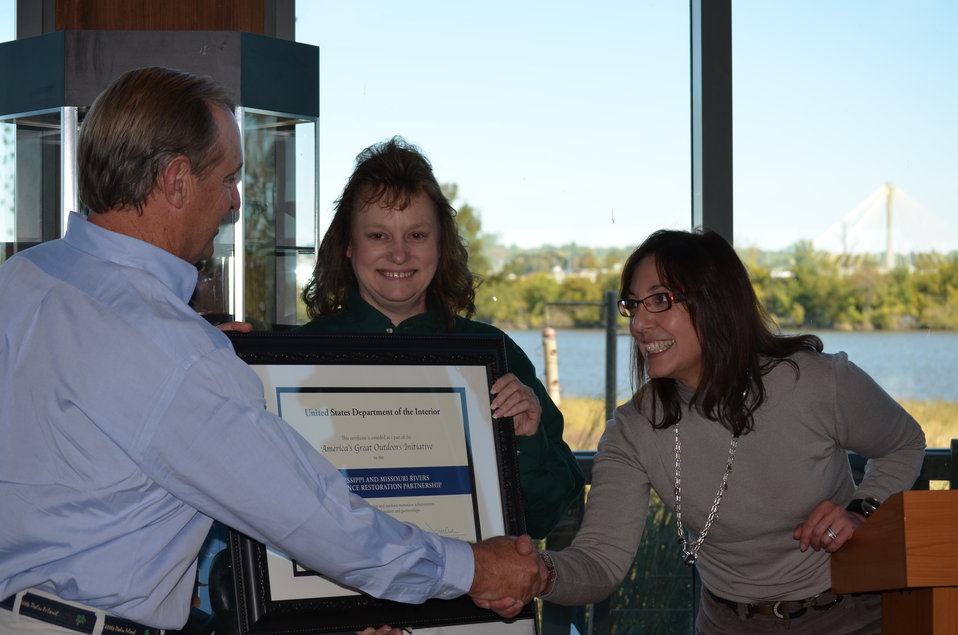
Great Rivers Habitat Alliance honored

President of Great Rivers Habitat Alliance Adolphus Busch presented award on behalf of Department of Interior. As a private landowner, Busch has demonstrated his commitement to floodplain conservation by donating a conservation easement on his farm and home in St. Charles County floodplain. USFWS/Ashley Spratt